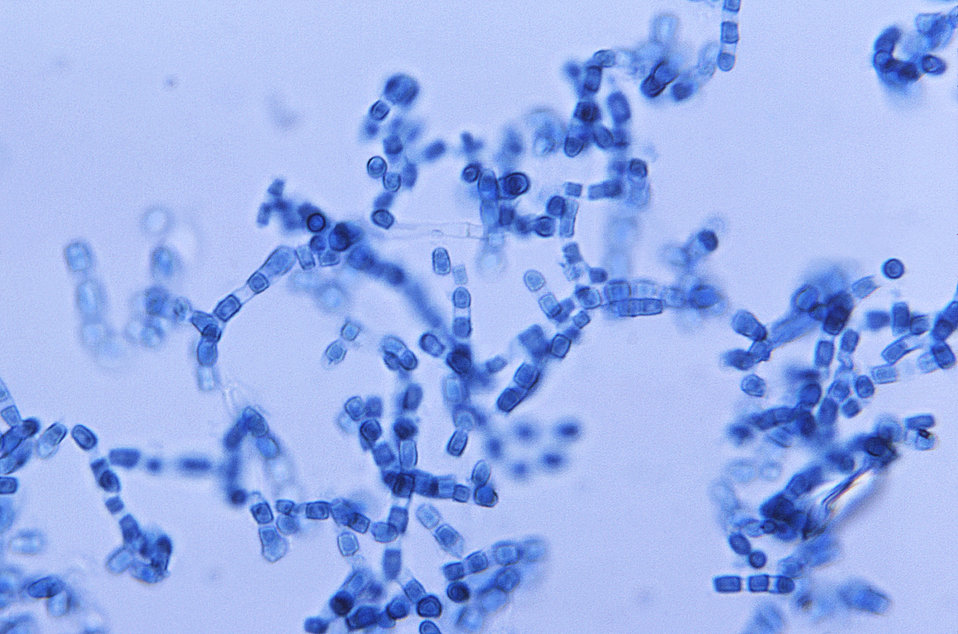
This photomicrograph revealed the presence of, thin, septate, hyaline or glass-like hyphae, from which numerous, thick-walled Coccidioides immitisarthroconidia have sprouted. The average arthrospore measures 3.0 x 4.5�m, and is barrel-shaped.